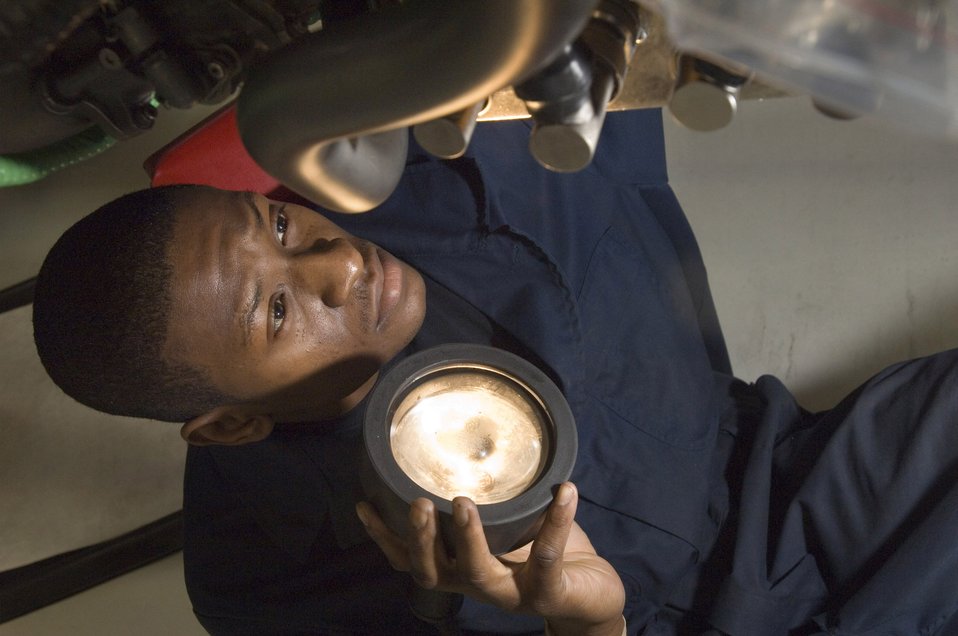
Spangdahlem mechanics fix jet engines 'on the line'

Staff Sgt. Melvin Smith inspects a F-16 Fighting Falcon jet engine at Spangdahlem Air Base, Germany, on Friday, March 24, 2006. Sergeant Smith of Norfolk, Va., is a jet engine mechanic with the 52nd Component Maintenance Squadron's propulsion flight.